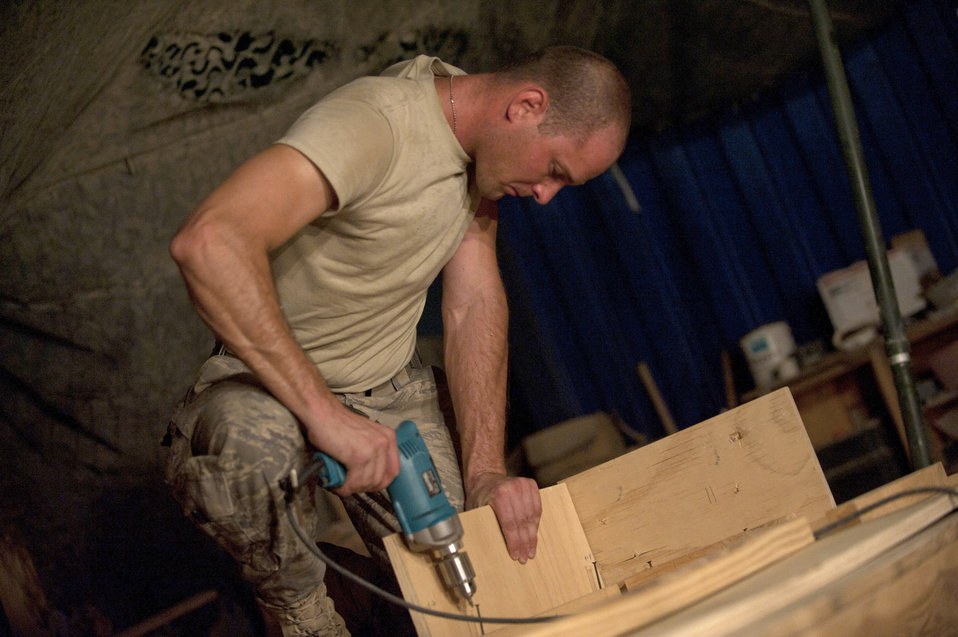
Sergeant Reininger

Master Sgt. Jason Reininger builds a child-size coffin to be turned over to the hospital at Camp Bastion, Afghanistan. Sergeant Reininger is an aerospace medical technician assigned to the 451st Expeditionary Aeromedical Evacuation Squadron.